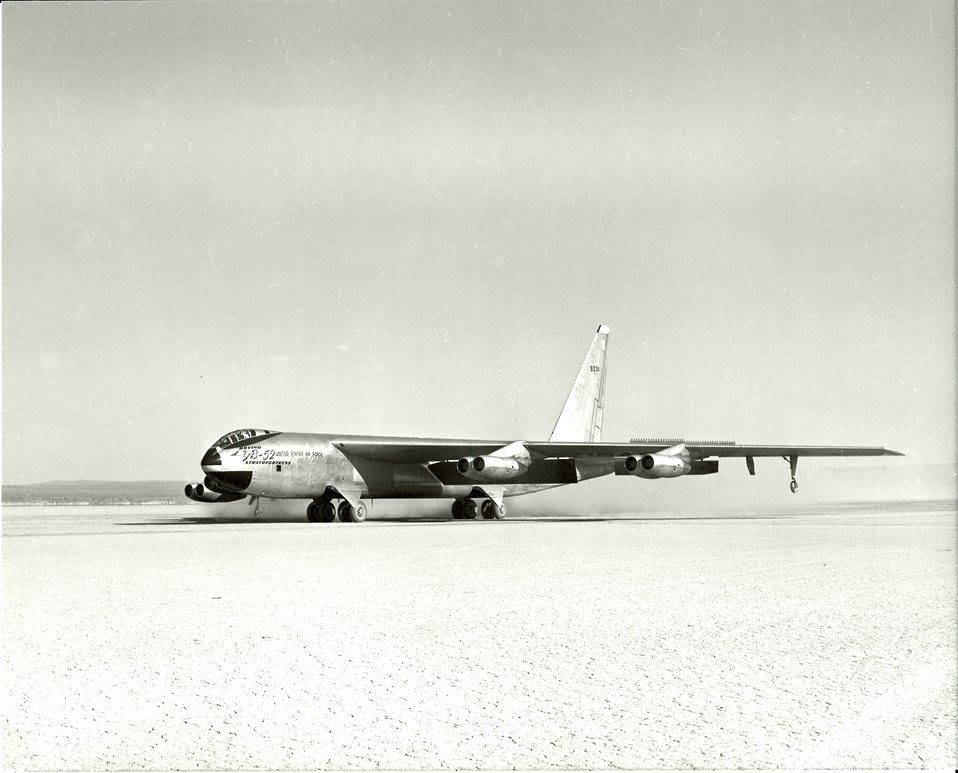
Boeing YB-52 lands in 1953

The Boeing YB-52 from North American lands on Rogers Dry Lake, Calif., in 1953.